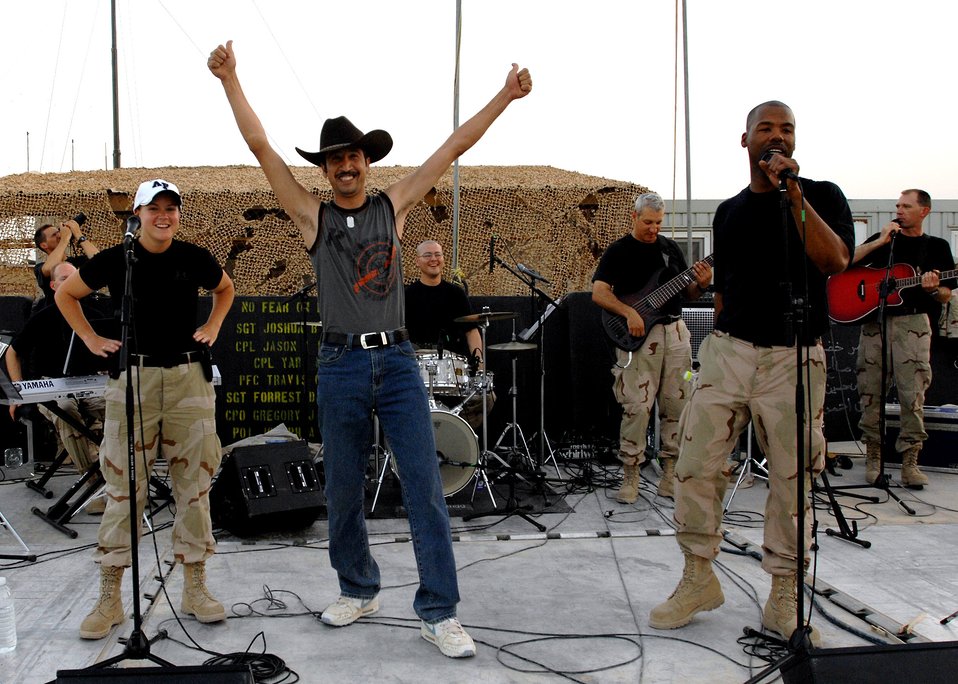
On tour in the AOR

Ameen, an Iraqi worker at Forward Operating Base McHenry, Iraq, joins the U.S. Central Command Air Forces Band